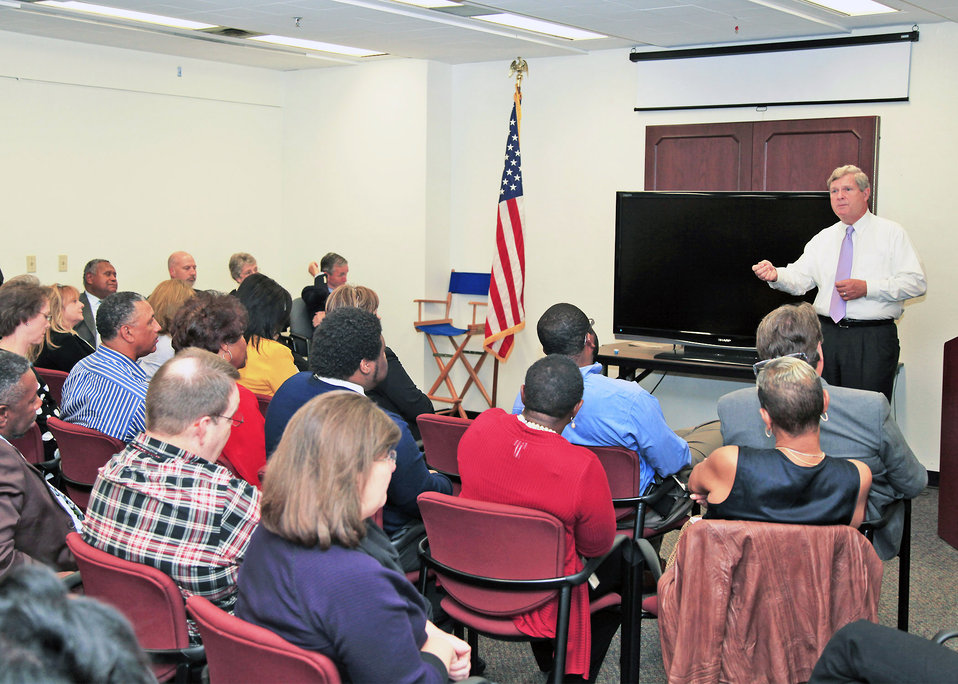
Agriculture Secretary Tom Vilsack visits with U.S. Department of Agriculture (USDA) employees at the Federal Building in Little Rock, AR on Wednesday, Oct. 30, 2013.